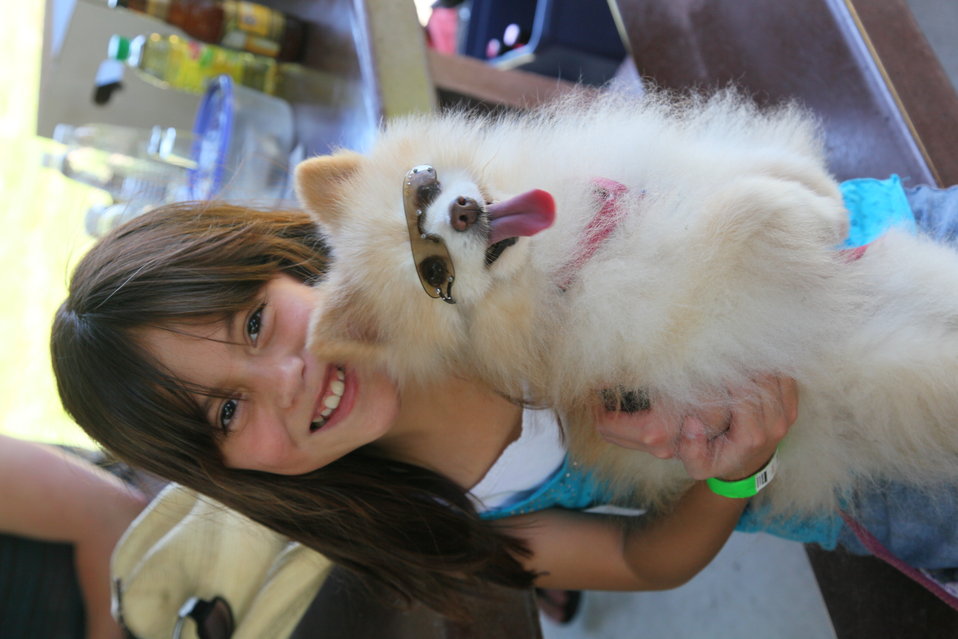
2011 Annual Picnic